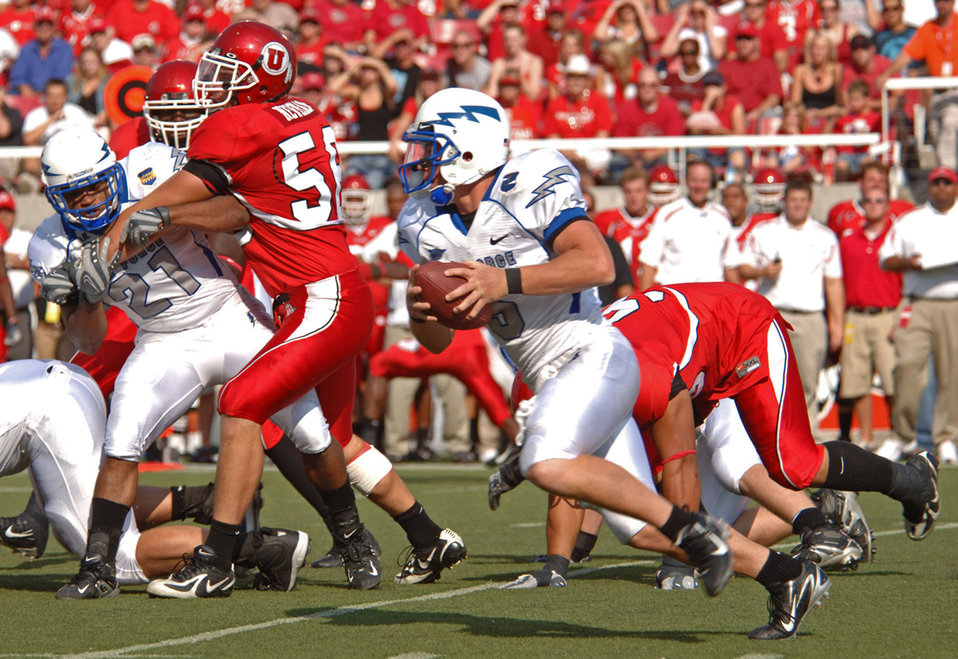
Football: Falcon defense stops Utah, 20-12

U.S. Air Force Academy Falcons senior quarterback Shaun Carney sprints on one of his 16 carries against Utah Sept. 8 in Salt Lake City. He logged a game-high 113 yards rushing in Air Force's 20-12 win at Rice-Eccles Stadium.